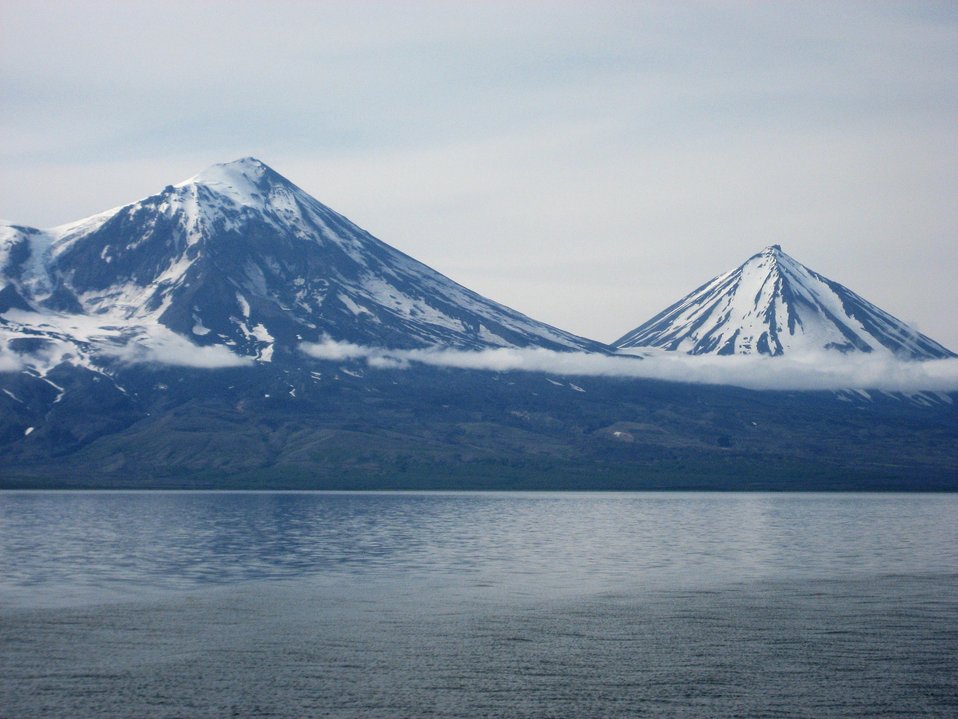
Pavlof and Pavlov Sister volcanoes as seen from Cold Bay area.